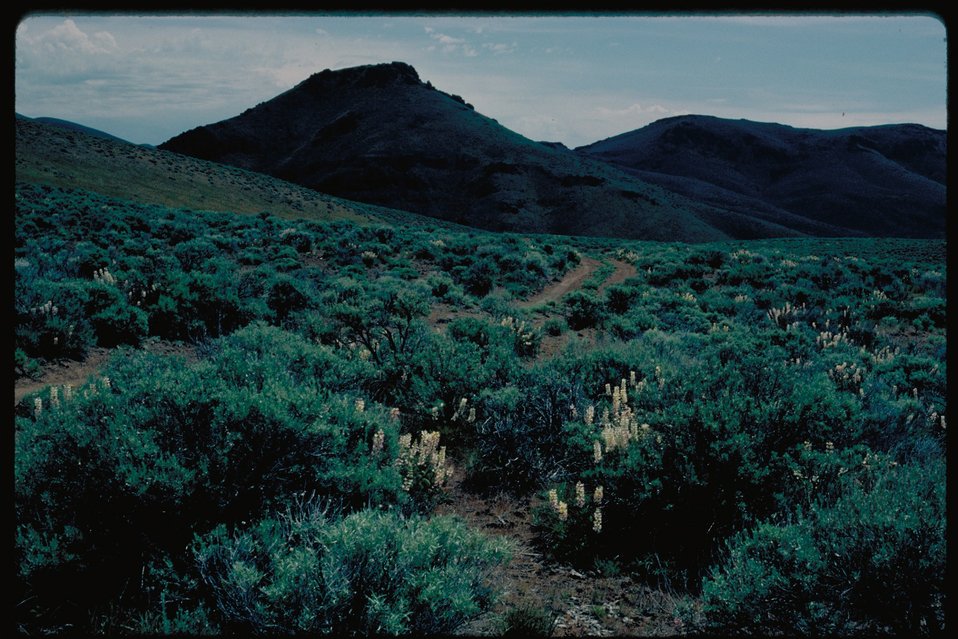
Goodales Cuttoff Northwest of Syrup Creek Oregon Trail Lower Snake River District